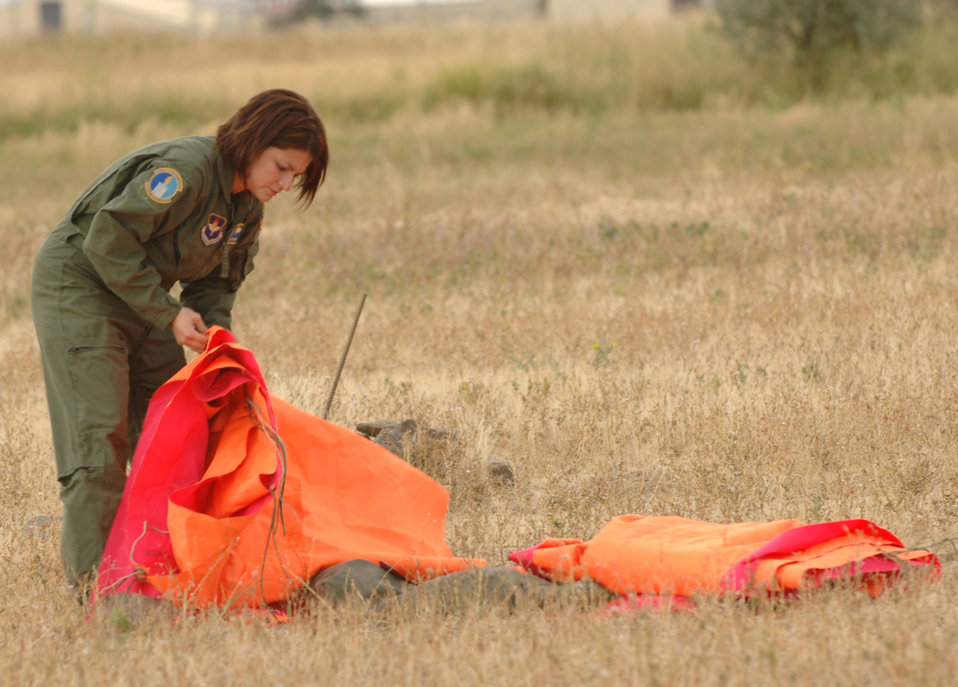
SERE specialists on target

Senior Airman Tara Norman sets up a drop-zone target before a parachute jump demonstration Sept. 18 at the survival, evasion, resistance and escape school at Fairchild Air Force Base, Wash. Parachute riggers perform a critical job by maintaining and rigging all parachutes and survival equipment in support of combat survivial training. Airman Norman is a parachute rigger with the 336th Training Support Squadron.